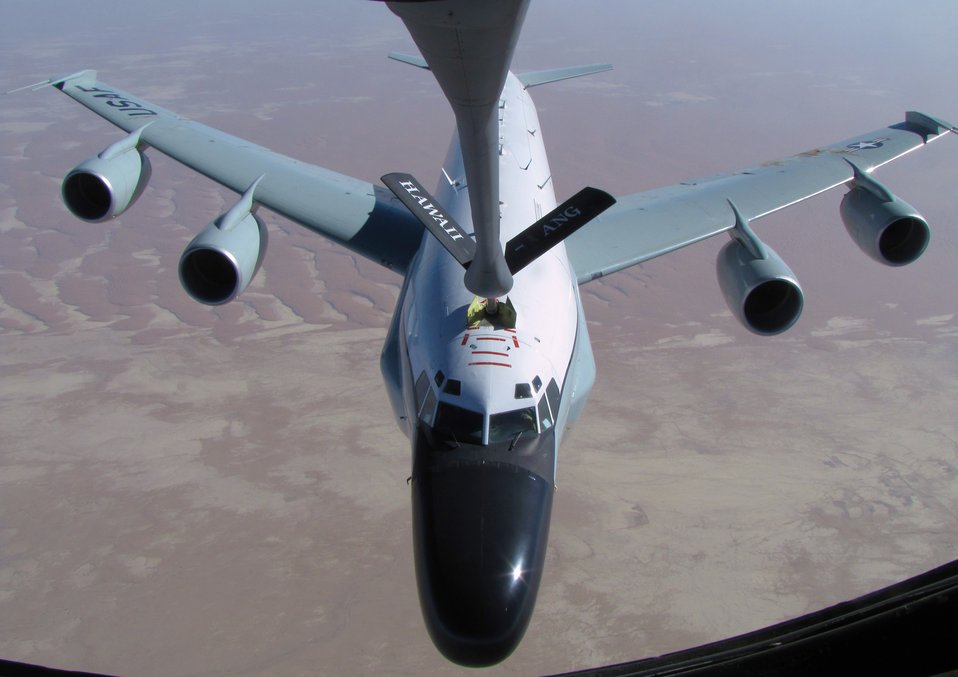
RC-135V/W Rivet Joint

The RC-135V/W Rivet Joint reconnaissance aircraft supports theater and national level consumers with near real time on-scene intelligence collection, analysis and dissemination capabilities.